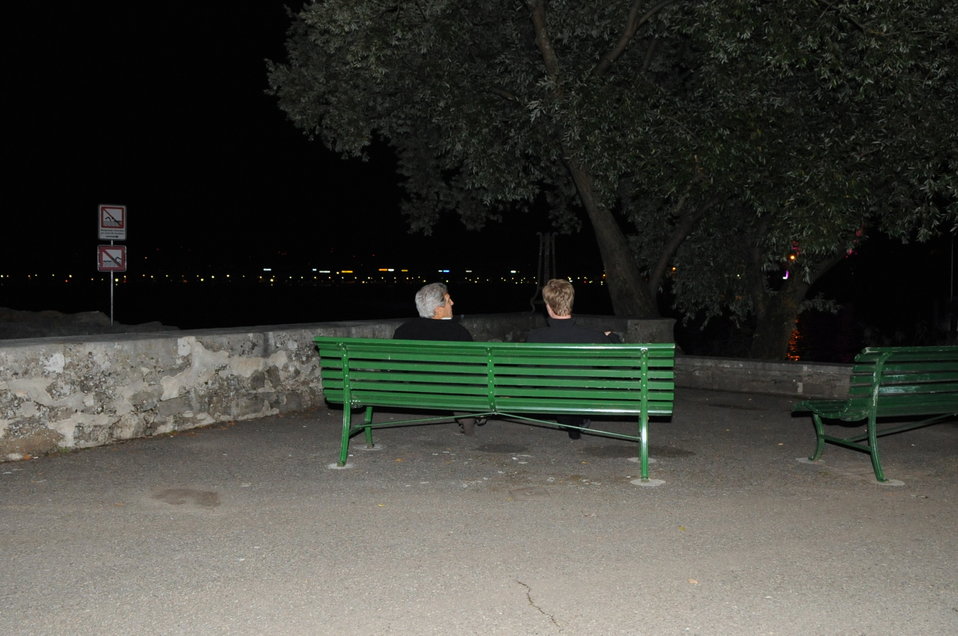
Secretary Kerry, Senior Aide Meininger Take Late-Night Break Next to Lake Geneva

12:58 a.m., September 14, 2013 - U.S. Secretary of State John Kerry and Senior Aide Jason Meininger sit on a bench next to Lake Geneva following a series of negotiating sessions with Russian officials over the elimination of Syrian chemical weapons.